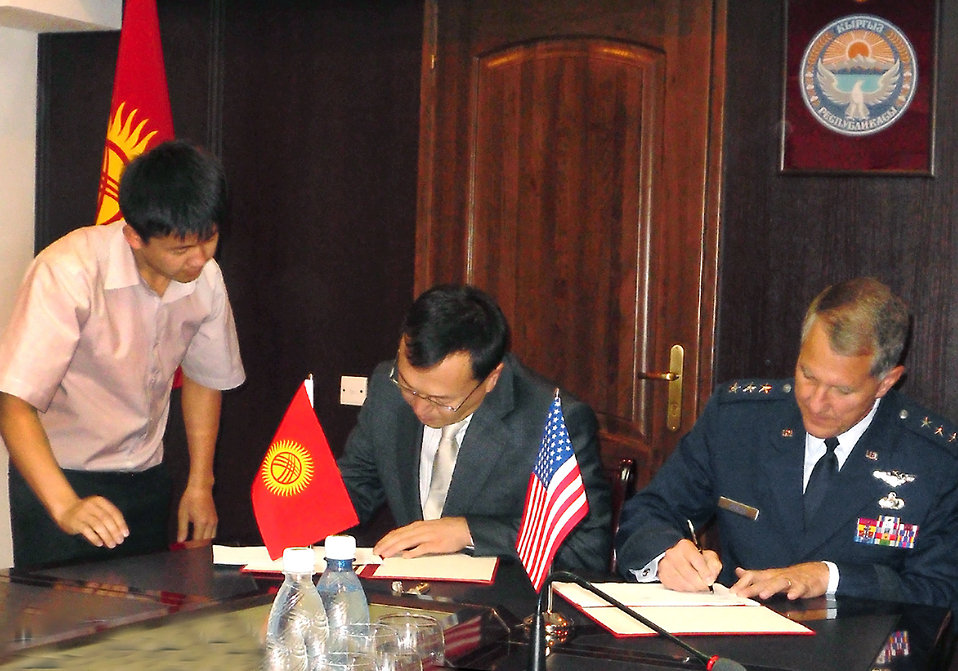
Agreement in Kyrgyzstan

Air Force Electronic Systems Center Commander Lt. Gen. Ted Bowlds and Kyrgyzstan Transportation Minister Erkin Isakov sign an agreement Sept. 21, 2010, that defines the scope of a critical foreign military sales effort in Kyrgyzstan. The work will provide the foundation for a robust air traffic control system here.